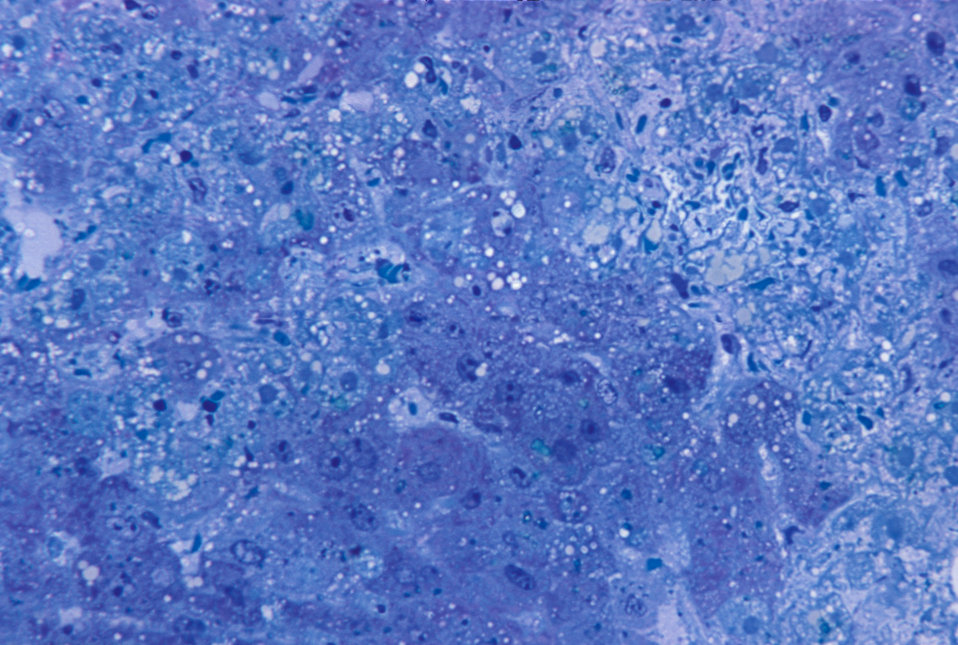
A photomicrograph of hepatitis caused by the Lassa virus, using toluidine-blue azure II stain, magnified 315X.